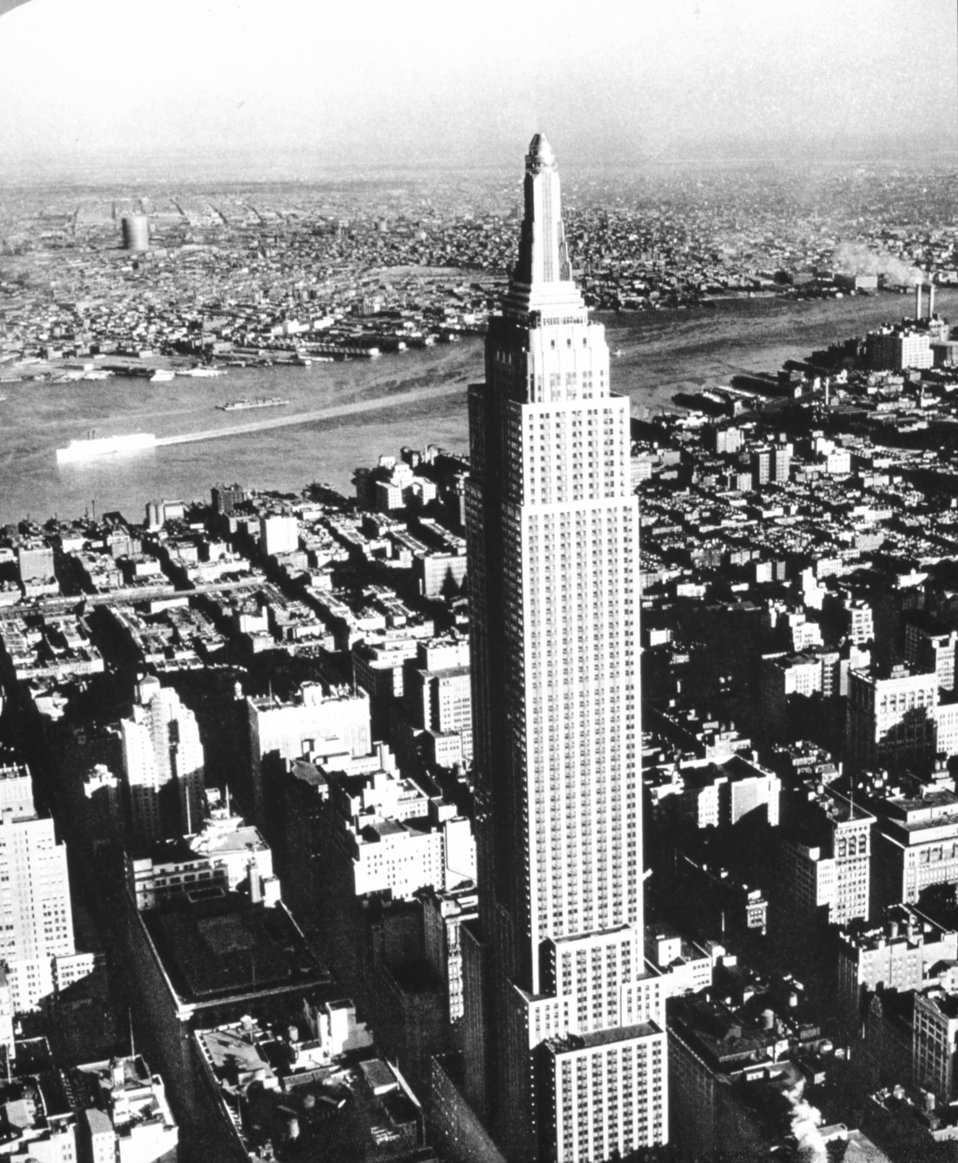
The Empire State Building in the late afternoon sun. In: 'Flug Und Wolken', Manfred Curry, Verlag F. Bruckmann, Munchen, 1932.